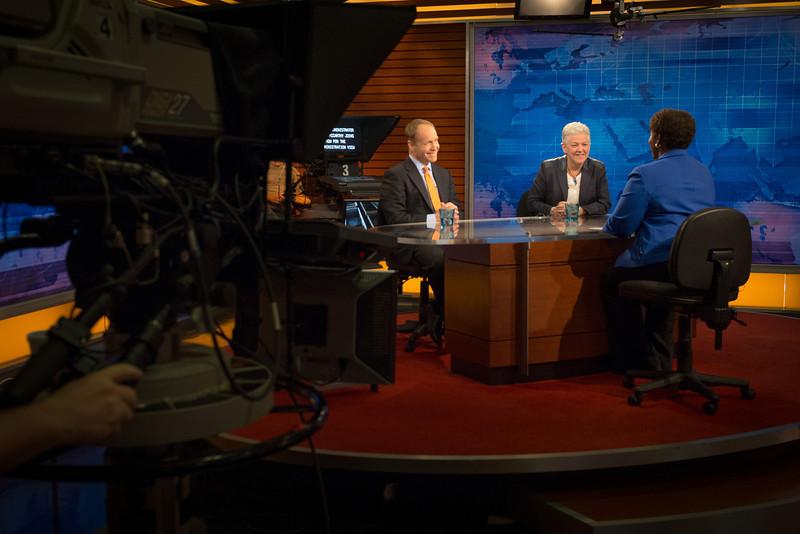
Day in the Life - June 2, 2014

6:23 pm - Wrapping up the day with a final interview, this time with NewsHour’s Gwen Ifill. (15/15)